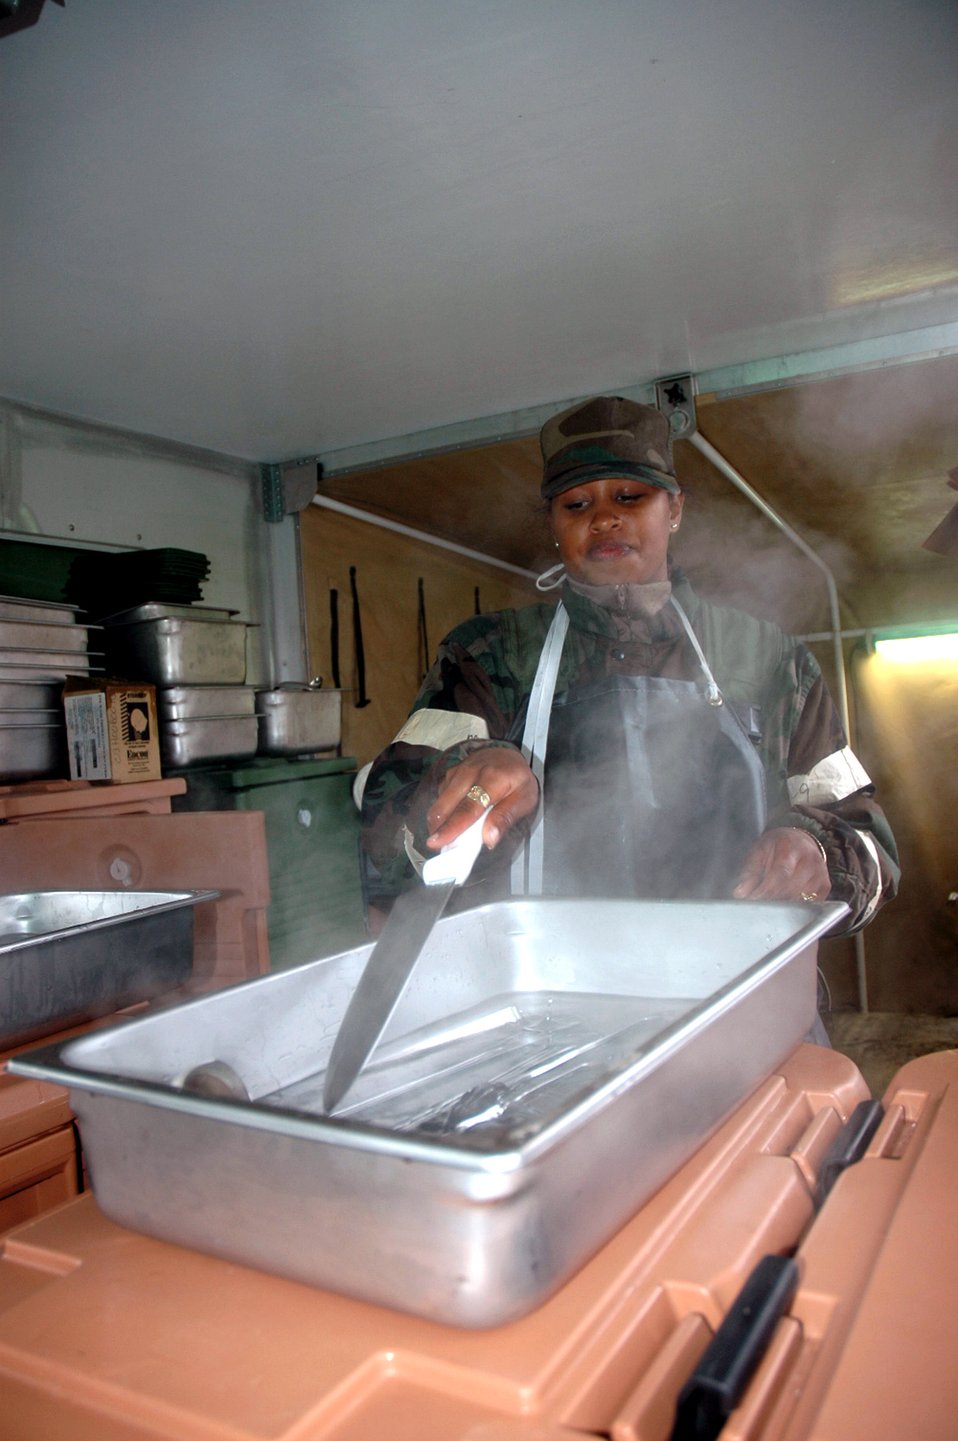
Services Airmen serve up real meals ready to eat

Senior Airman Joanna Houston works in the Single Pallet Expeditionary Kitchen, or SPEK, preparing hot meals during operations for Air Force Exercise Eagle Flag 07-1 on Oct. 17, 2006 at Naval Air Engineering Station at Lakehurst, N.J. Airman Houston, along with 30 other services Airmen deploy to each Eagle Flag to set up and use the SPEK where they also receive extra training on the expeditionary kitchen. Eagle Flag is operated by the U.S. Air Force Expeditionary Center's 421st Combat Training Squadron. Airman Houston is a services journeyman from the 5th Services Squadron, at Minot Air Force Base, N.D.